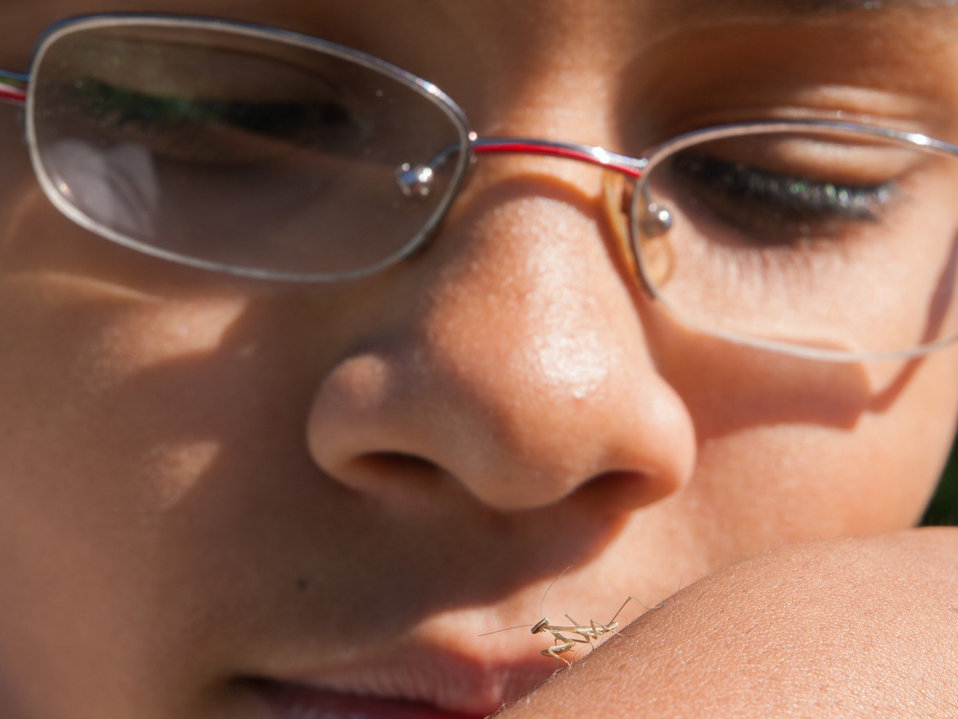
Praying mantis

Child with recently hatched praying mantis.